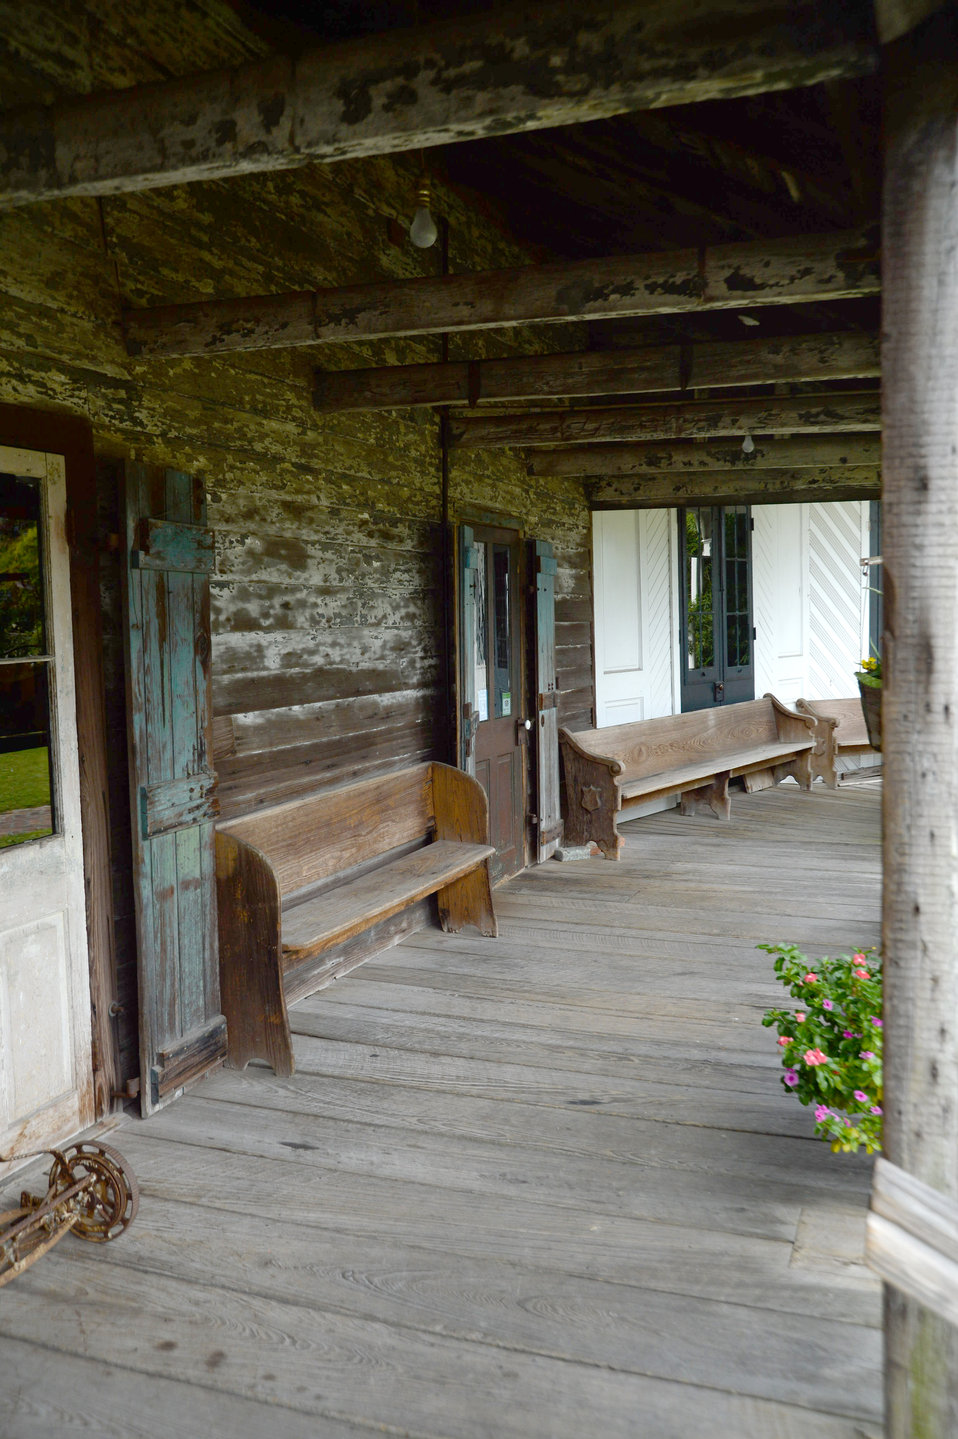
There are many scenic views surrounding New Orleans, LA on Tuesday, Nov. 19, 2013.